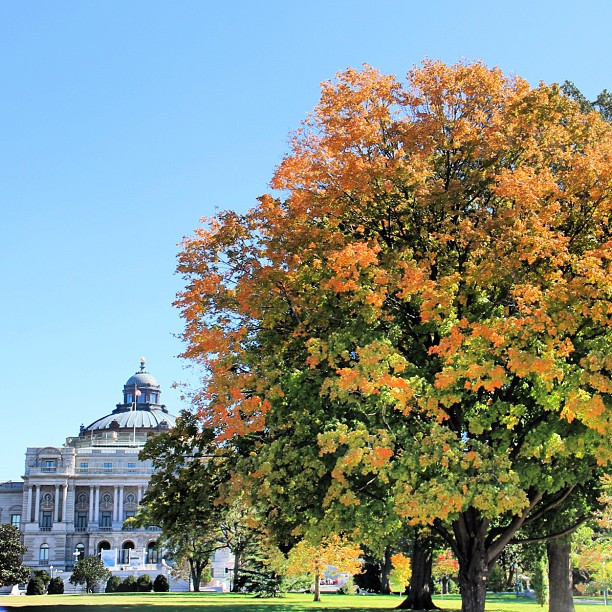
Perfect fall afternoon on Capitol Grounds. View of @librarycongress Jefferson bldg viewed from Capitol. #dc